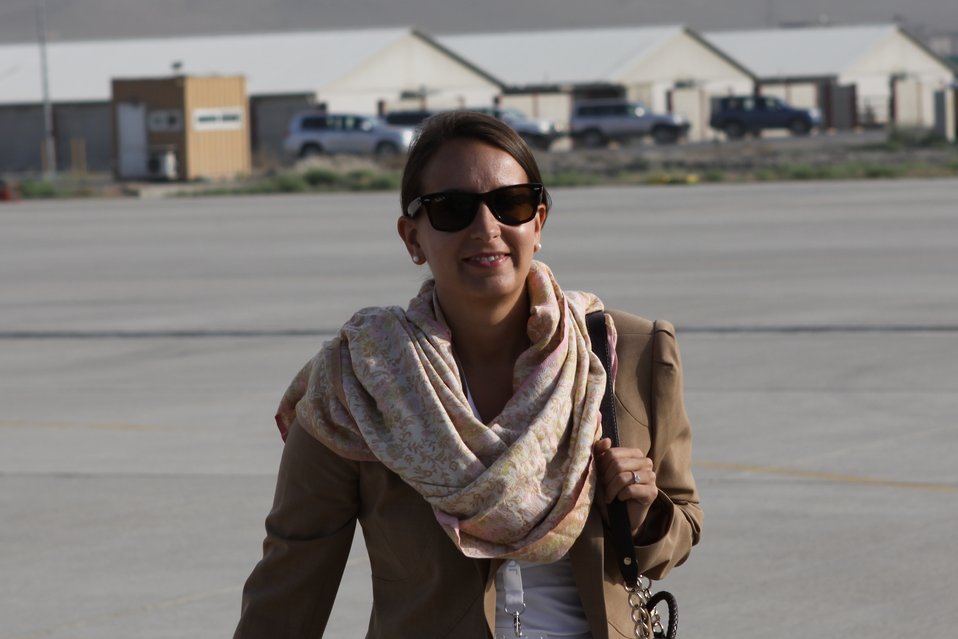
100525 Hirat Marble Conference 003